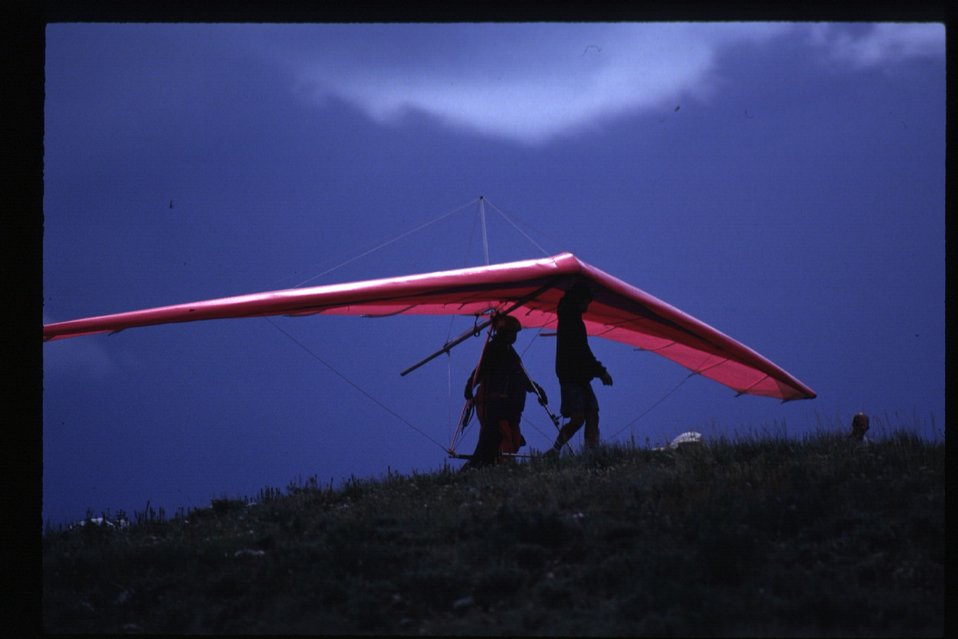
Hang Gliders on King Mountain Arco Idaho Idaho Falls Field Office USRD Upper Snake River District